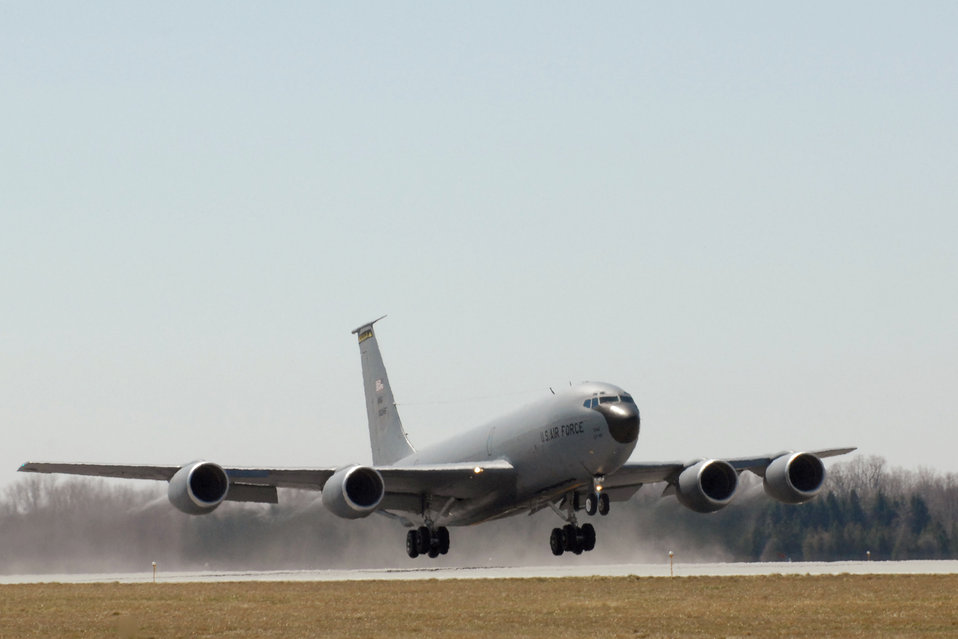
Airmen prepare KC-135

A KC-135 Stratotanker takes off April 14, 2011, from Selfridge Air National Guard Base, Mich.